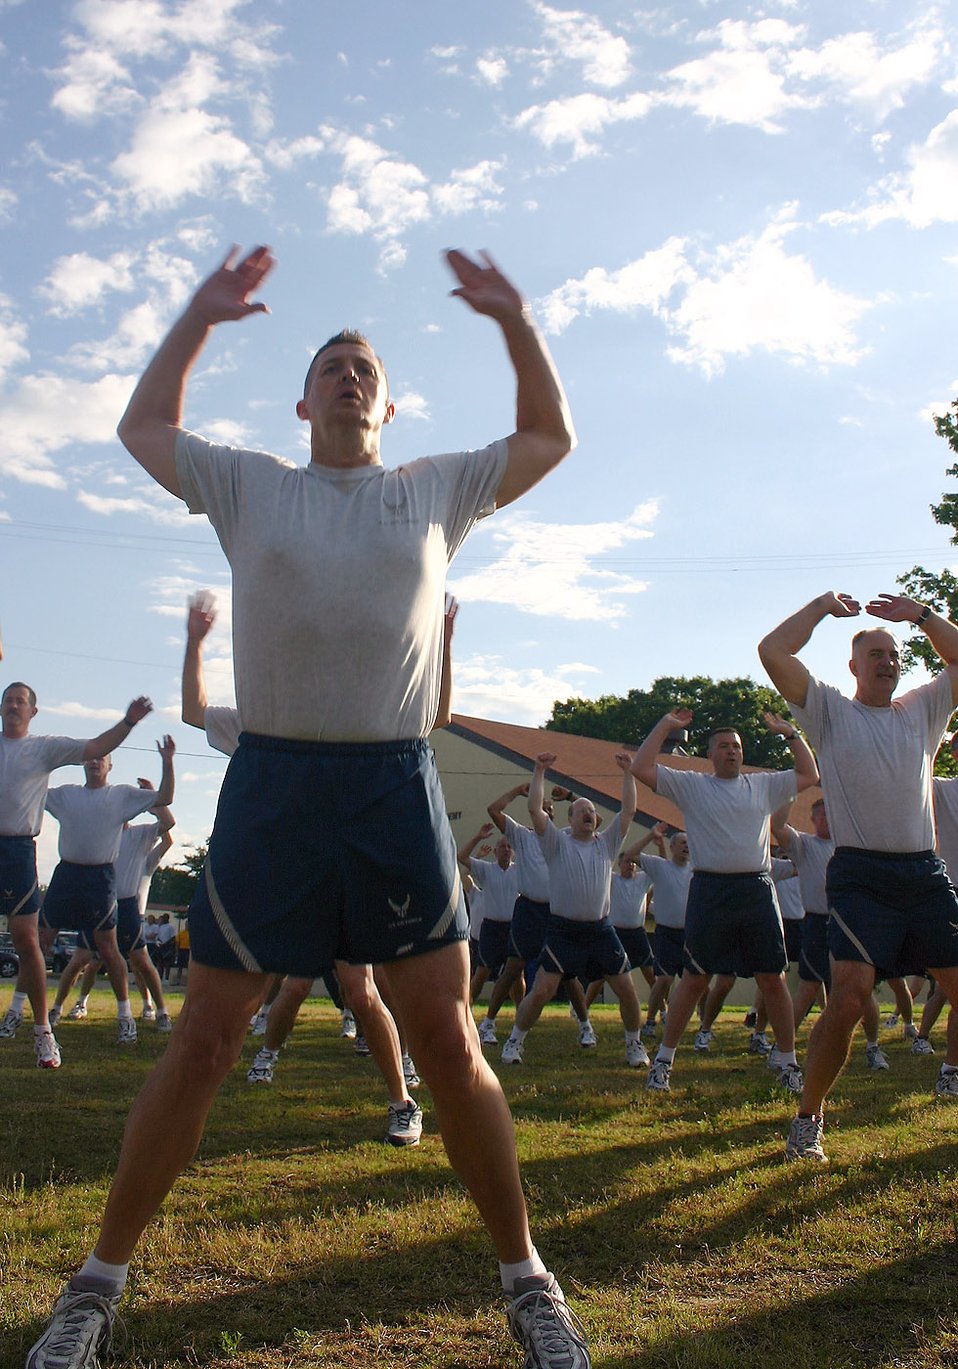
Top leaders unite for senior enlisted summit

Chief Master Sgt. John Harrison (left) counts out loud as he performs jumping jacks with his peers during the first event of the Senior Enlisted Leader Summit May 18 at Maxwell Air Force Base's Gunter Annex in Alabama. More than 350 command chief master sergeants, career field managers, professional military education commandants and other key senior enlisted leaders kicked off the 2008 Senior Enlisted Leader Summit with a 2.2-mile formation run at Maxwell's Gunter Annex. Chief Harrison is assigned to the Air Force Inspection Agency at Kirtland Air Force Base, N.M.